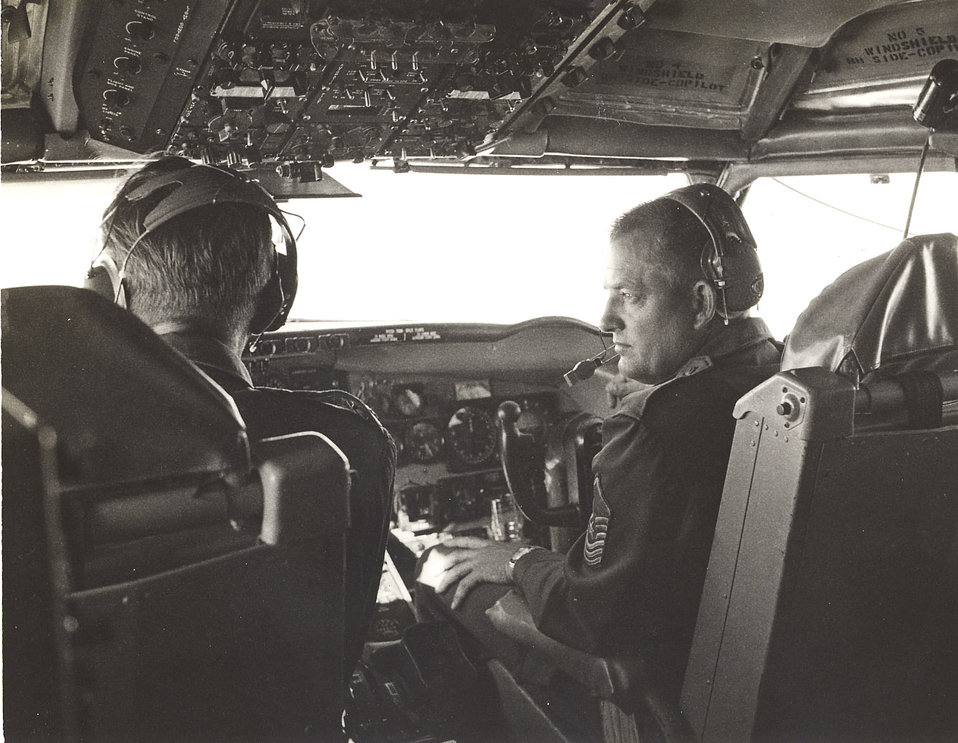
Retired chief can't say goodbye to KC-135

Then-Senior Master Sgt. Bobby McCasland serves as a flight engineer on the KC-135A Speckled Trout, tail number 55-3126, in this early 1960s photo.